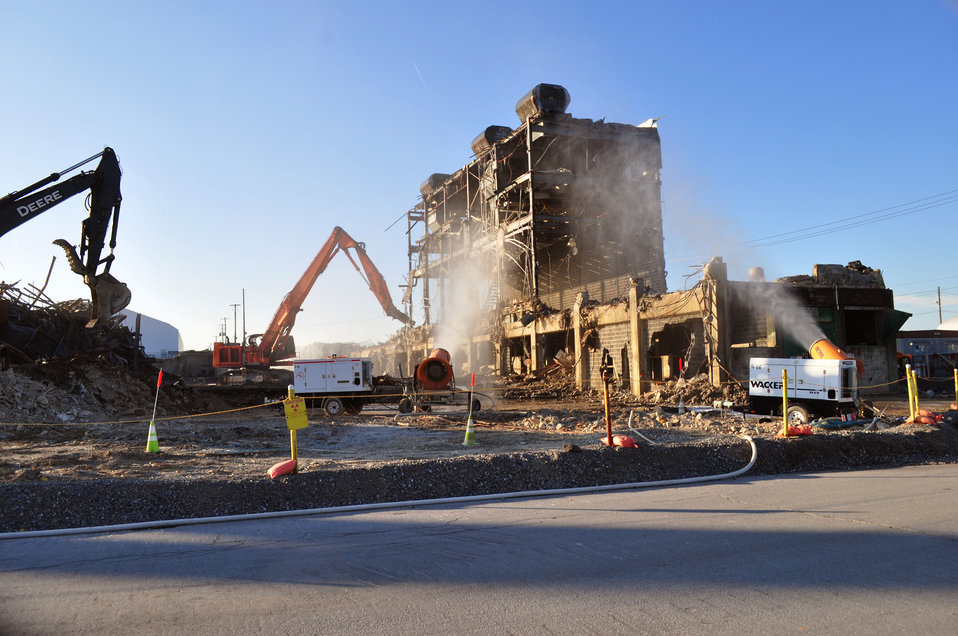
DandD of K-25 North Tower

13-005 DOE photo Lynn Freeny 1-23-2013 ETTP North Tower K-25 Oak Ridge Tennessee